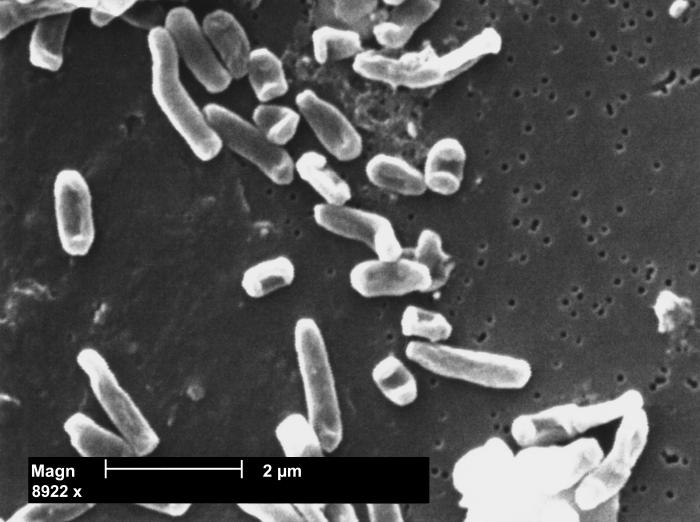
This scanning electron micrograph (SEM) depicted numbers of Segniliparus rugosus bacteria, of the strain ATCC BAA-947T = CIP-108380T, magnified 8922x.